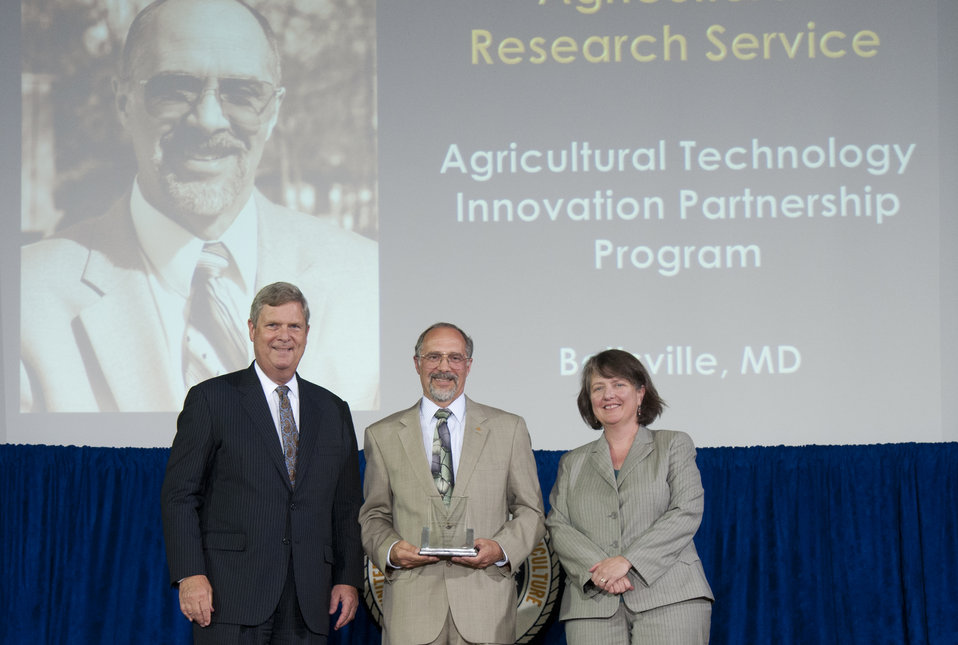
Agriculture Secretary Tom Vilsack and Agriculture Deputy Secretary Kathleen Merrigan present the Secretary’s Honor Award to Agricultural Technology Innovation Partnership Program Agricultural Research Service (ARS) group leader Richard J. Brenner at the U.S. Department of Agriculture (USDA) 64th Annual Honor Awards Ceremony in Washington, D.C. on Wednesday, Sept. 12, 2012. The Agricultural Technology Innovation Partnership Program created the Agricultural Technology Innovation Partnership (ATIP) program, and used the ATIP network to provide rural farmers and businesses USDA technology-based solutions to their regional agricultural problems.